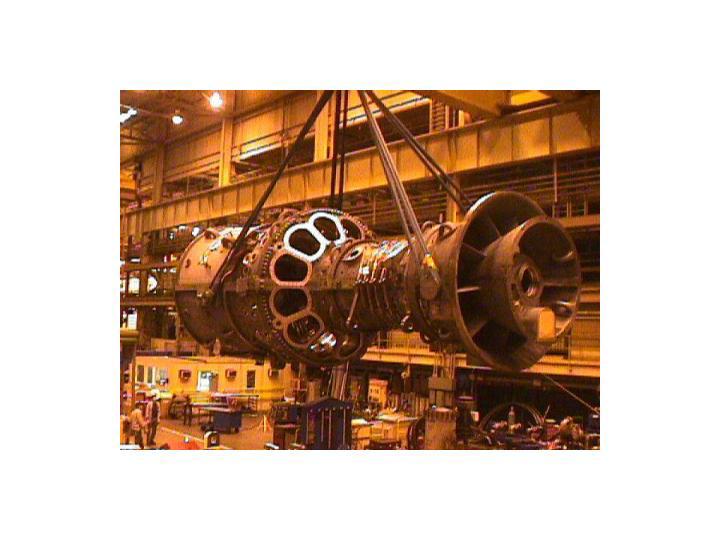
GE'S 4000 TON ADVANCED GAS TURBINE, THE SIZE OF A LOCOMOTIVE, IS A JOINT PRODUCT OF GE POWER SYSTEMS AND DOE.

NATURAL GAS TURBINES ARE BEING DEVELOPED TO PRODUCE ELECTRICITY IN A SIMPLE, LOW COST ENVIRONMENTALLY FRIENDLY WAY. DOE'S NATIONAL ENERGY TECHNOLOGY LABORATORY (NETL) INITIATED THE ADVANCED TURBINE SYSTEMS (ATS) PROGRAM AND HAS PARTNERED WITH INDUSTRY TO PRODUCE A NEW GENERATION OF HIGH EFFICIENCY GAS TURBINES FOR CENTRAL STATION ELECTRICITY PRODUCTION, USING CLEAN BURNING NATURAL GAS.